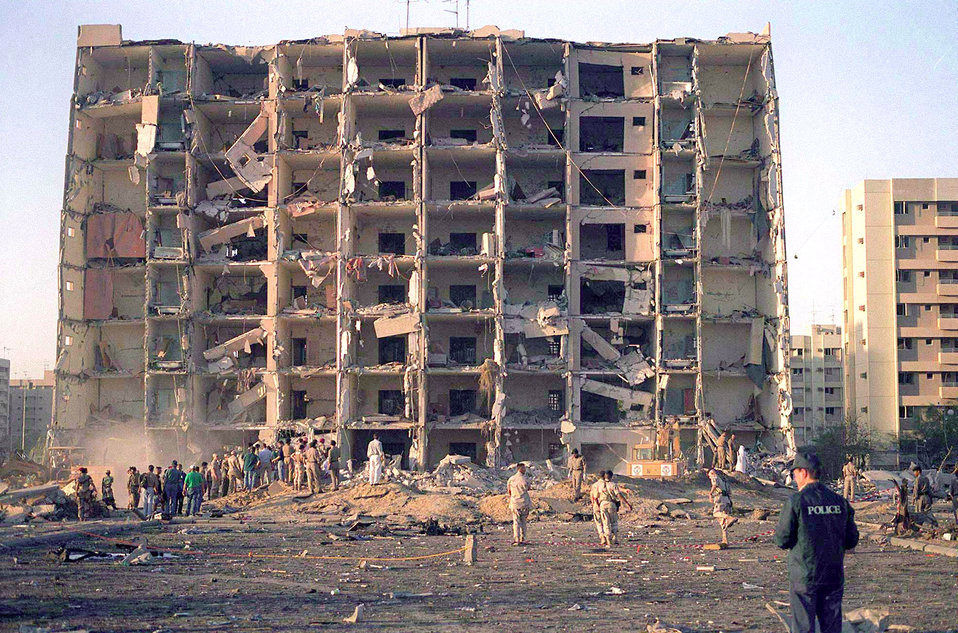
Airmen use lessons learned 10 years after Khobar Towers attack

Nineteen Airmen died and hundreds were injured in the terrorist attack at Khobar Towers in Dhahran, Saudi Arabia, on June 25, 1996. The front of Bldg. 131 was blown off when a fuel truck parked nearby was detonated by terrorists.